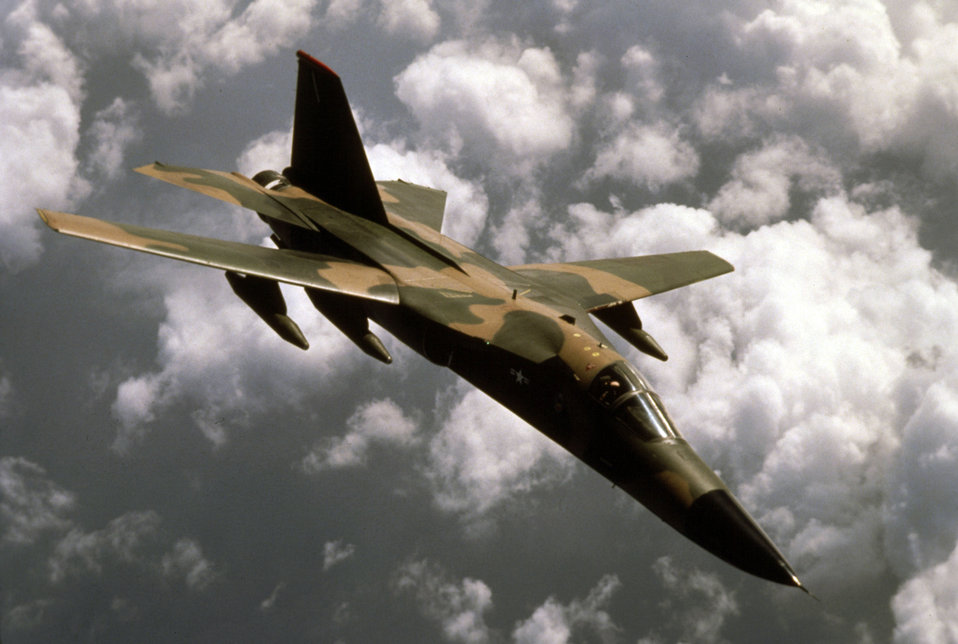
F-111 Aardvark. Air Force inventory in 1967.